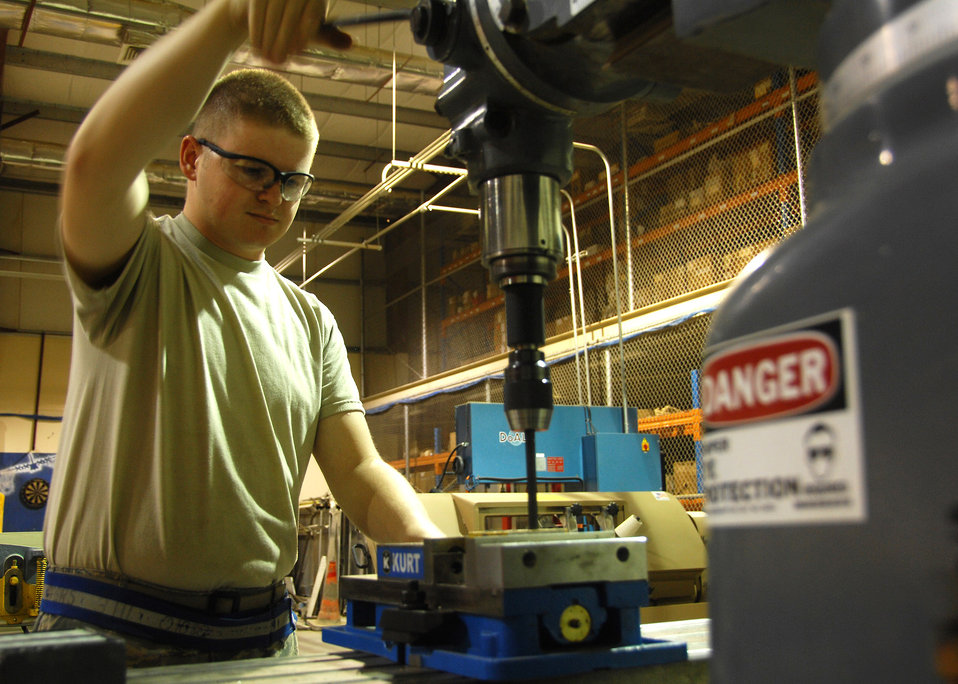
Combat metals

Senior Airman Timothy Jeffers drills holes into a fuel probe mounting bracket for a C-130 Hercules Sept. 17 at an air base in Southwest Asia. Members of the combat metals shop perform aircraft sheet metal fabrication, structural repairs and modifications for aircraft. Airman Jeffers is assigned to the 386th Expeditionary Maintenance Squadron combat metals section and deployed from Davis-Monthan Air Force Base, Ariz.